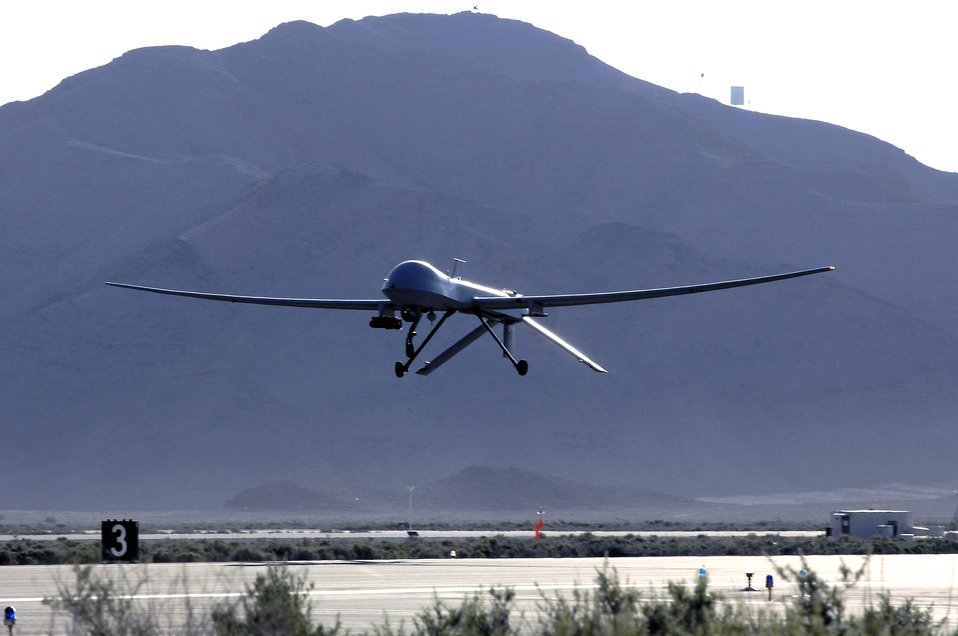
ISR operations: Eye in the sky

The MQ-1 Predator provides armed reconnaissance, airborne surveillance and target acquisition for coalition forces in Iraq.